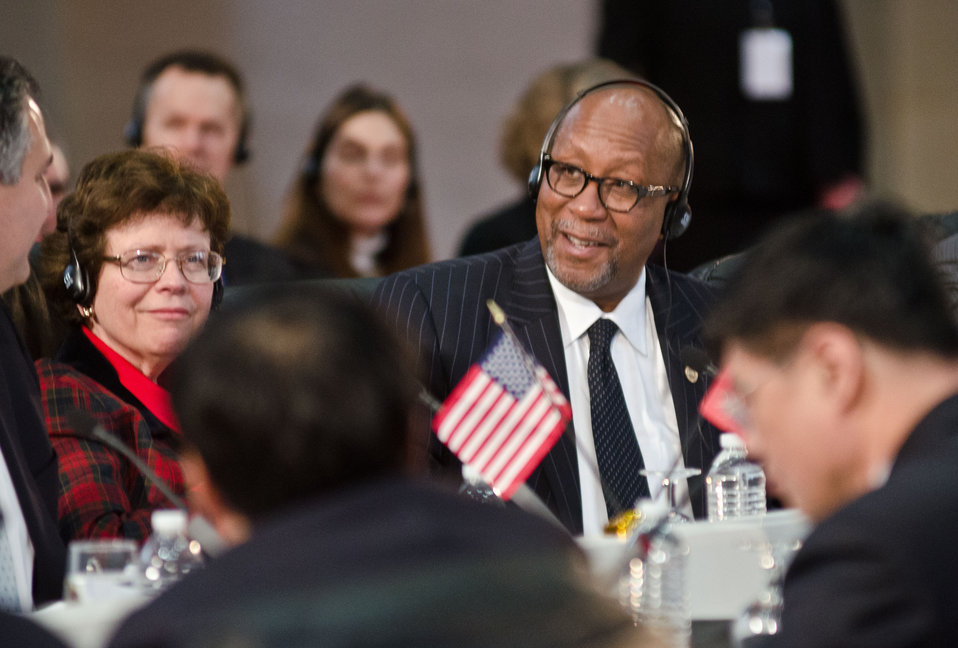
U.S. Trade Representative Ron Kirk speaks at the 23rd Session of the U.S. China Joint Commission on Commerce and Trade (JCCT) at the Andrew W. Mellon Auditorium in Washington, D.C. on Wednesday, Dec. 19, 2012. The JCCT holds high-level plenary meetings on an annual basis to review progress made by working groups that focus on a wide variety of trade issues. These working groups meet throughout the year to address topics such as intellectual property rights, agriculture, pharmaceuticals and medical devices, information technology, tourism, commercial law, environment, and statistics.